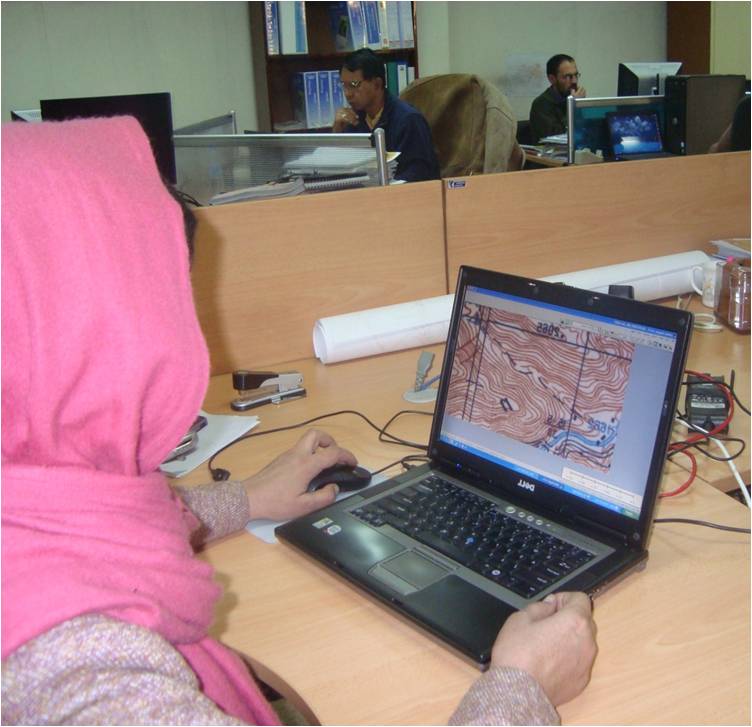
Women Engineers Rebuild Afghanistan

Women are a growing force in the Afghan workplace. To advance the role of women in society, the U.S. Government supports women entering into the science and engineering fields. Female engineers in Afghanistan are strong pioneers who have broken through gender stereotypes to contribute to their country’s development.
Fatima Konistany is an engineer with USAID’s Afghanistan Infrastructure Rehabilitation Program (AIRP). With a master’s degree in roads engineering from Kabul Polytechnic University, she has helped to design urban, rural, and provincial roads.
“This is a male dominated profession,” said her supervisor. “To find an Afghan woman who is an engineer with a master’s degree in engineering is a real credit to her.”
Fatima liked math and science as a student and her father and uncle, both engineers, encouraged her. Now a mother herself with children following her example, she is quick to stress the teamwork aspect of engineering. A good road, she says, results from the expertise of many engineers – from surveyors to geometric designers.
Mrs. Konistany’s specialty is hydraulic engineering. She gauges water flows and run-offs to properly design road structures like curbs, medians, culverts, and bridges. Feeding data from topographical studies and survey teams into advanced software programs, she creates maps and models that show where concrete structures are needed.
Her current area of responsibility is the Bamyan-Dushi Road, a 164-kilometer route that will provide a year-round alternative to the treacherous Salang Pass. She estimates that the route will need 860 culverts to maintain water flow and prevent flooding.
As an Afghan, Mrs. Konistany brings a special commitment to the rebuilding of her country. “When I am on the Bamyan-Dushi Road,” she said, “I know that I built that road, that I was part of it. When I see vehicles and people using the road, I feel very good.” Her motivation, she says, is simple: “I work for my people.”